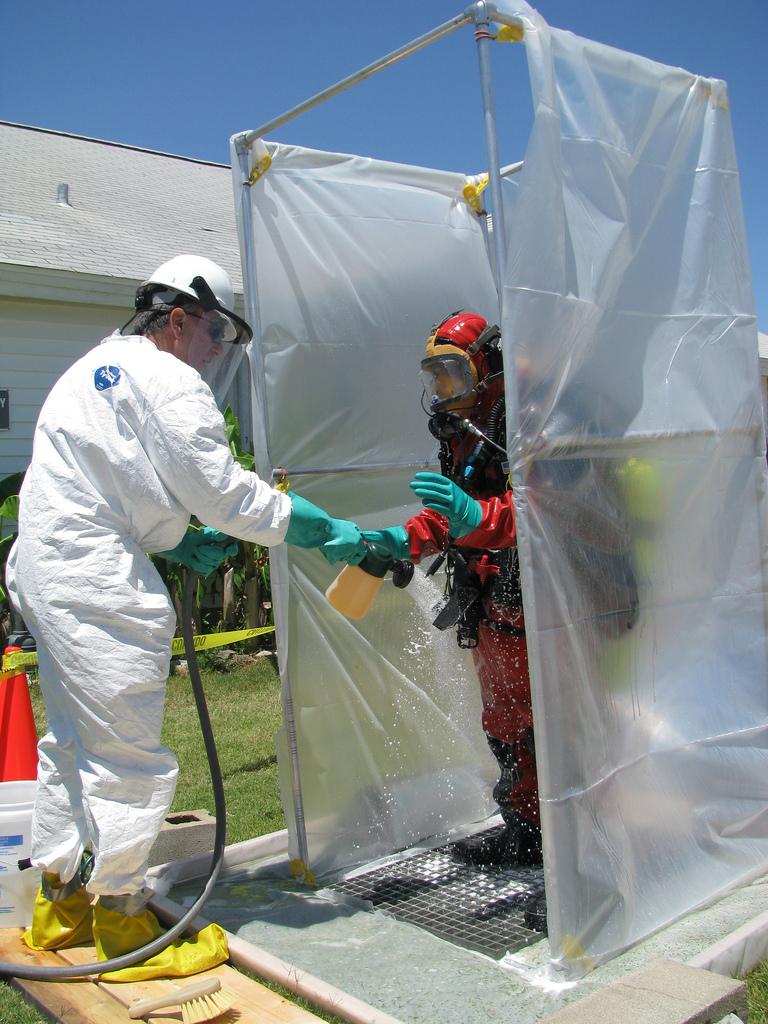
Teaching the importance of decontamination

Contaminated water diving is a constant challenge for EPA divers, who are introduced to these techniques during initial training.

The divers take this knowledge around the country to conduct studies, inspections, and other work to support of EPA's mission.

For more about the US EPA ORD-GED lab: www.epa.gov/ged/

Photo of Chris Gallow and Scott Grossman, ERT.